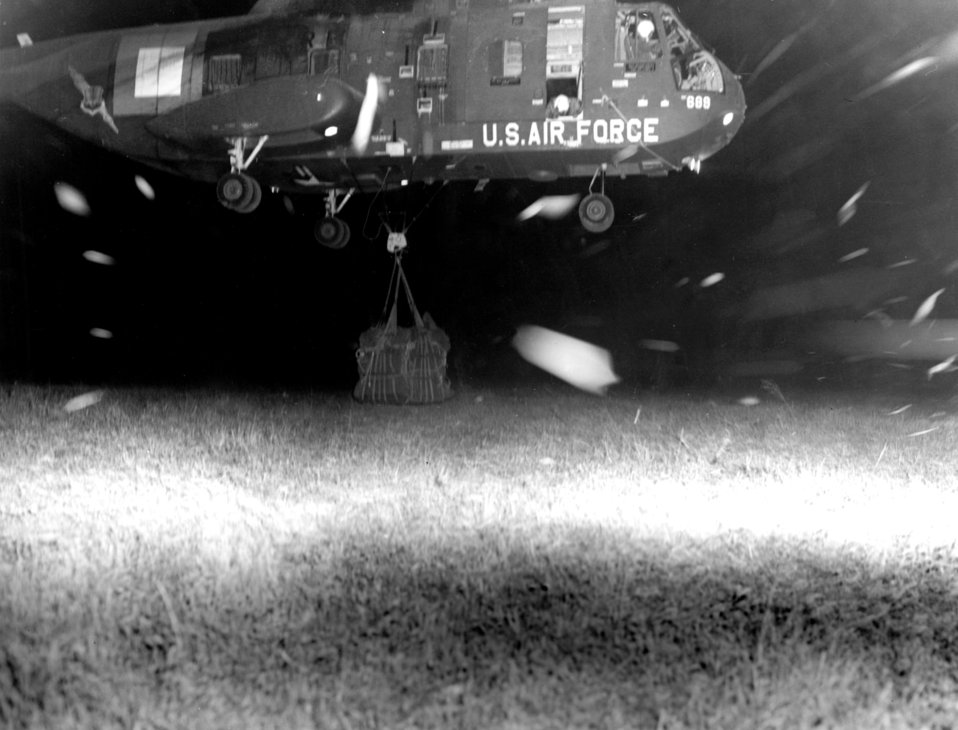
CH-3C helicopter

1960s -- In a night operation, a U.S. Air Force CH-3C helicopter hovers with a cargo load before airlifting it to a forward location. The operation was in support of Joint Task Force Ozark during U.S. Strike Command's Exercise Gold Fire I. The down-draft from the whirling blades raised a cloud of dust and chaff around the rotor-bladed aircraft.